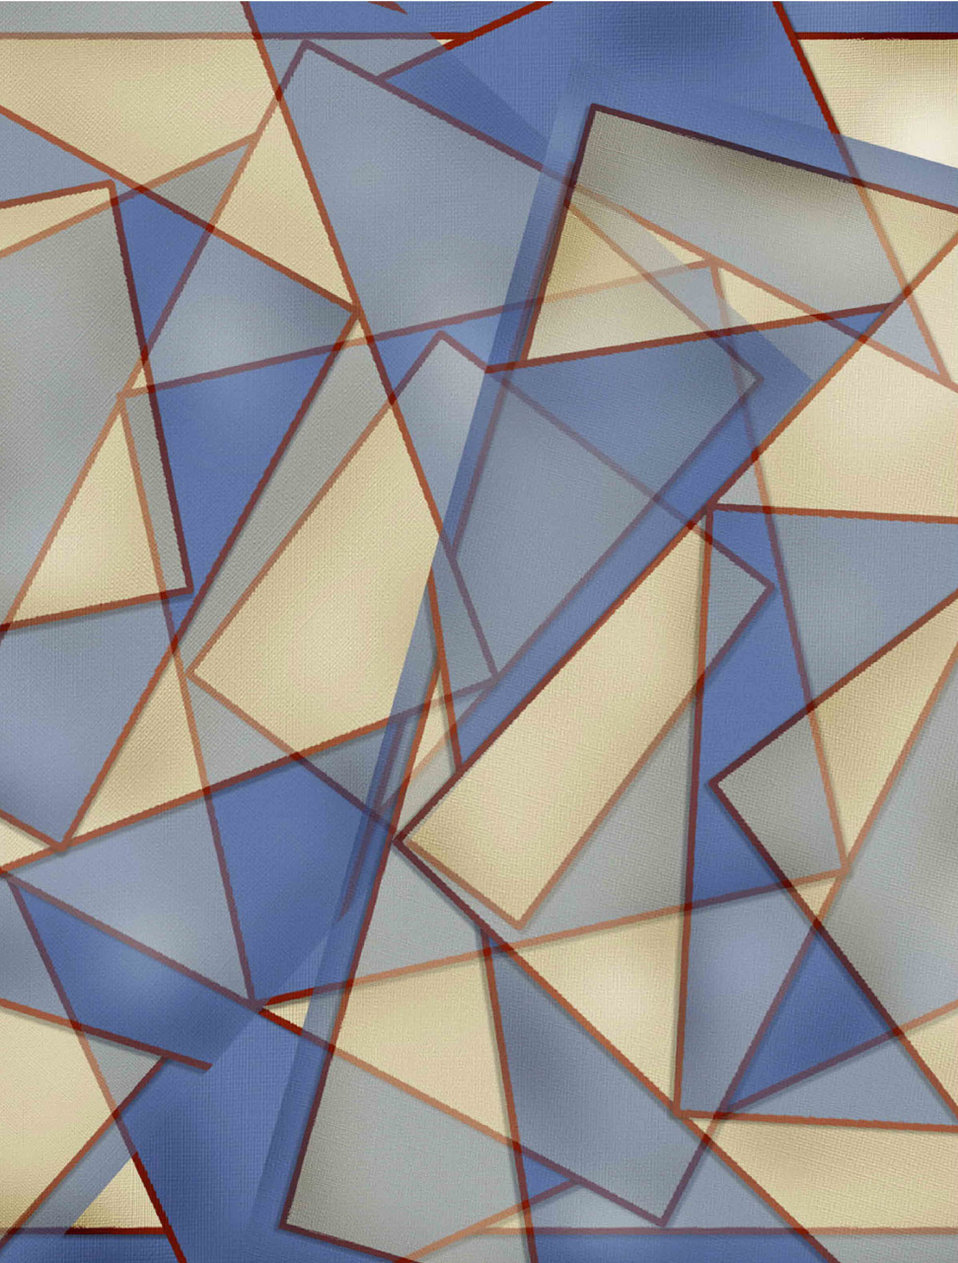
Abstract triangles

Blue and tan triangles intertwine together to create an abstract background.